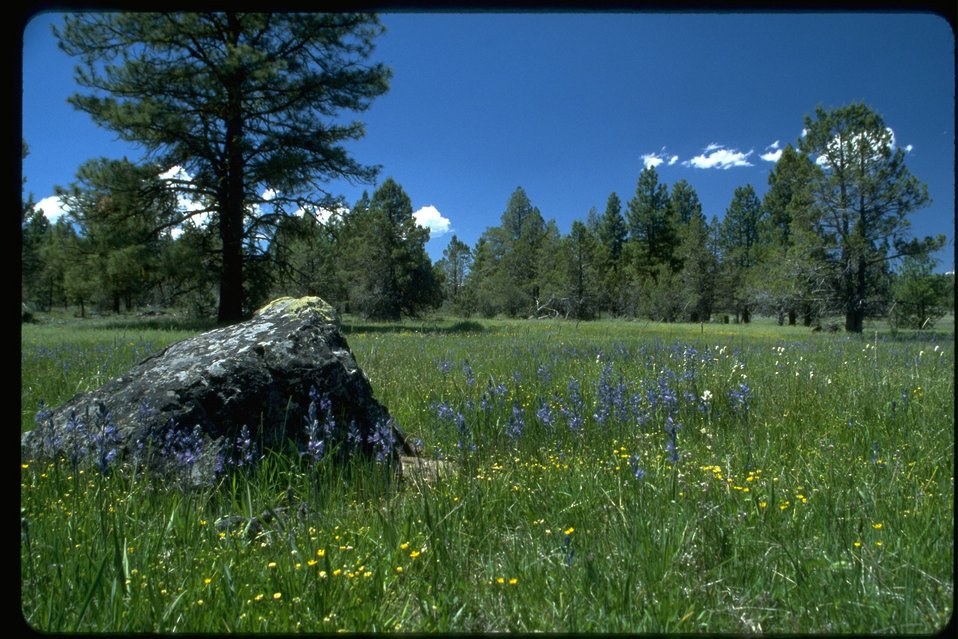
Medium shot of Blue Camas site.